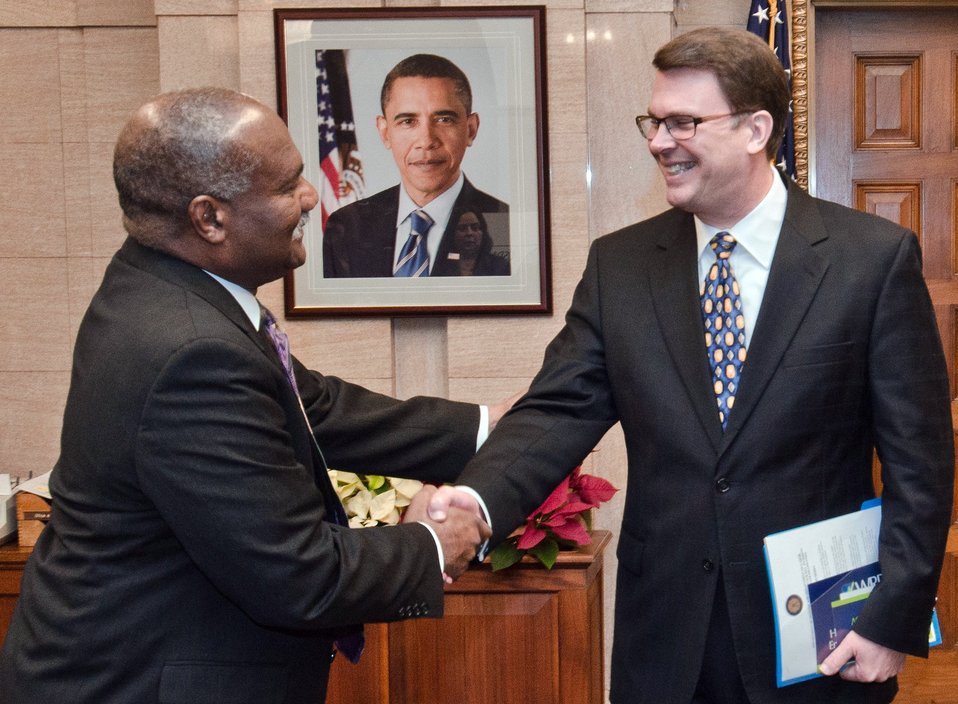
Agriculture Assistant Secretary for Administration Pearlie Reed (left) met with Office of Personnel Management Director John Berry (right) before they addressed the Work the Work Force Recruitment Program’s (WRP) “Your Key To Hiring Student Interns and Employees with Disabilities” event hosted by the U. S. Department of Agriculture (USDA) in the Jefferson Auditorium, in Washington, D.C. on Tuesday, February 7, 2012.